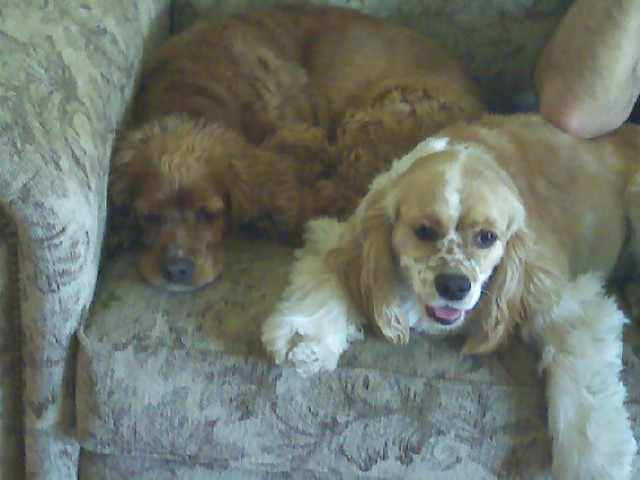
self-made picture of two American cocker spaniels. the one on the right is called Micheal Waltrip.